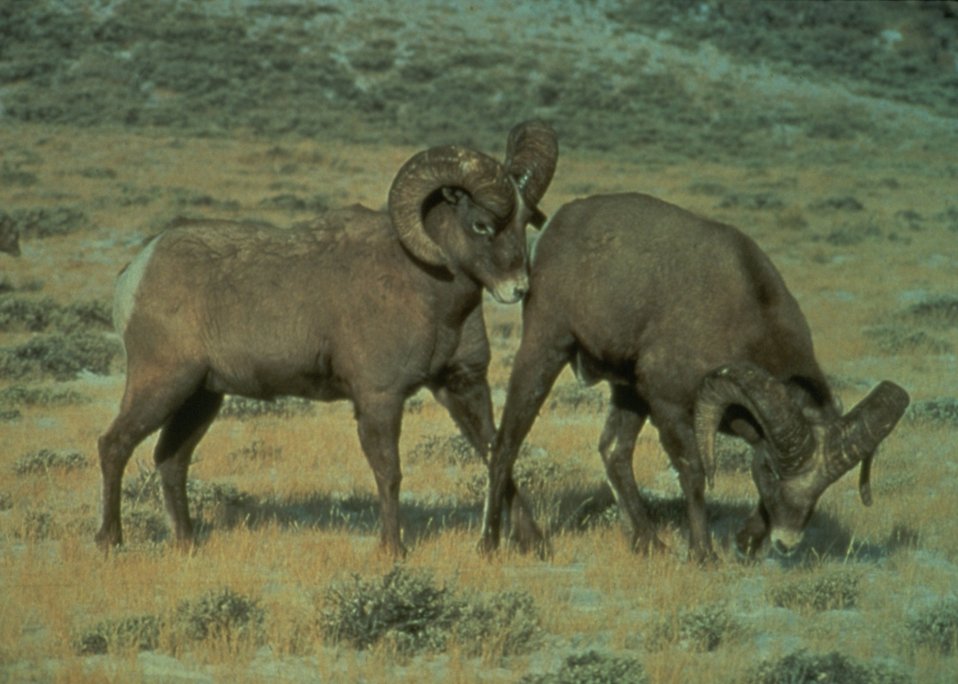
Big horn sheep engaging in play.